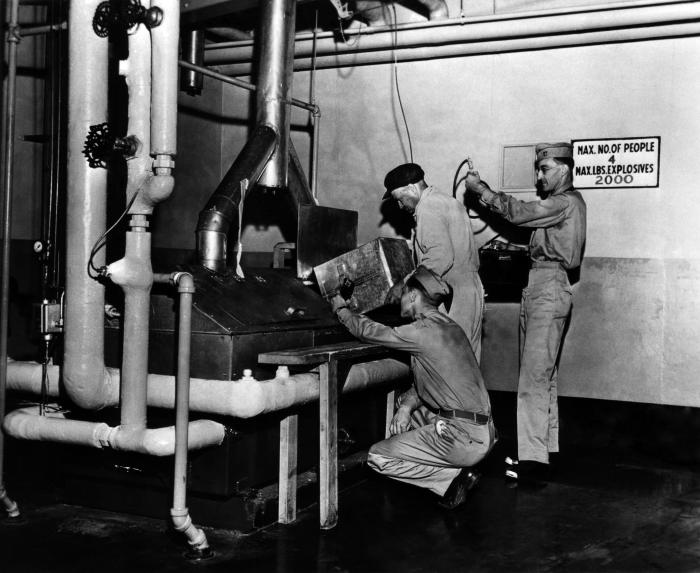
This historical 1943 image, which was provided by the Center for Disease Control's (CDC), National Institute for Occupational Safety and Health (NIOSH), depicted three Public Health Service (PHS) officers in the process of an using industrial hygiene air-sampling machine, in order to determine the airborne concentrations of the explosive TNT (trinitrotoluene) inside an Ohio military ordnance plant. A poisonous chemical, TNT will irritate the skin upon contact, and actually will change the skin's color to a bright yellow-orange. Prolonged exposure leads to liver damage, anemia, enlargement of the spleen, and a compromised immune system, to name a few of its negative effects. Trinitrotoluene is also a known carcinogen. Note that none of the officers were wearing any protective gear such as a filtered breathing mask, goggles, or gloves.